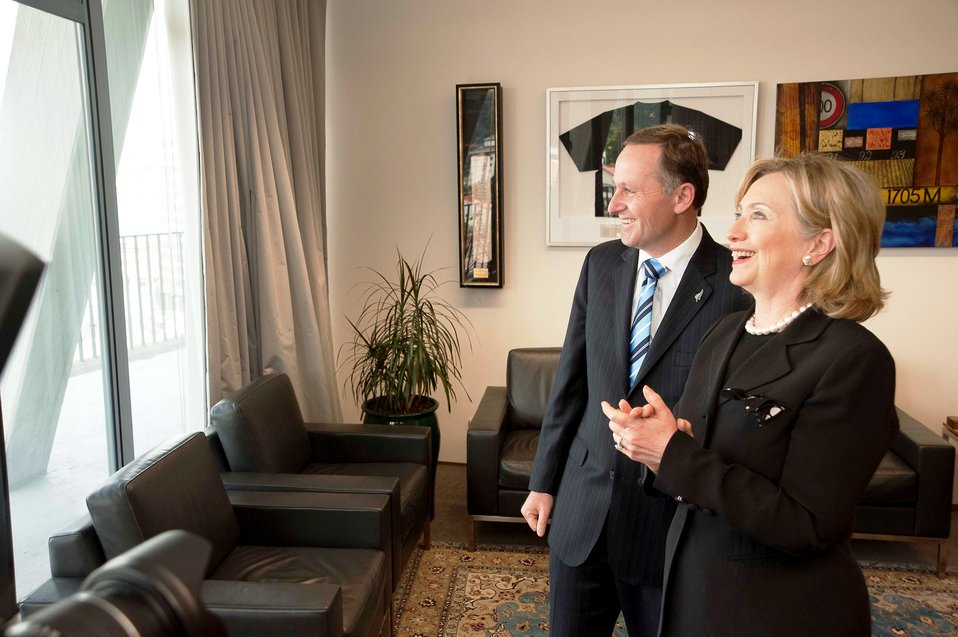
Secretary Clinton Looks at a Photo on the Wall

U.S. Secretary of State Hillary Rodham Clinton looks at a photo on the wall with New Zealand Prime Minister John Key in the Prime Minister's office in Wellington, New Zealand, on November 4, 2010.